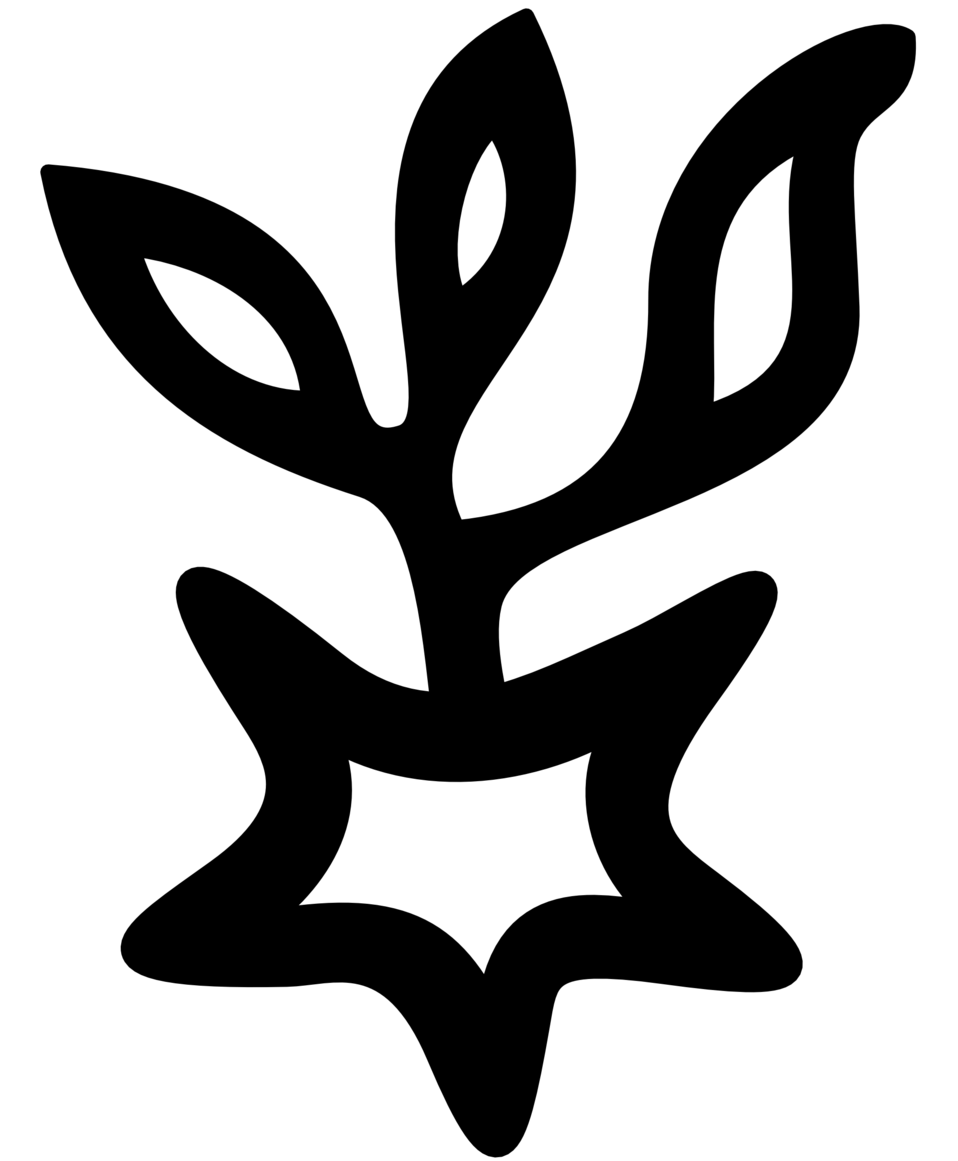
Symbol for the asteroid 12 Victoria